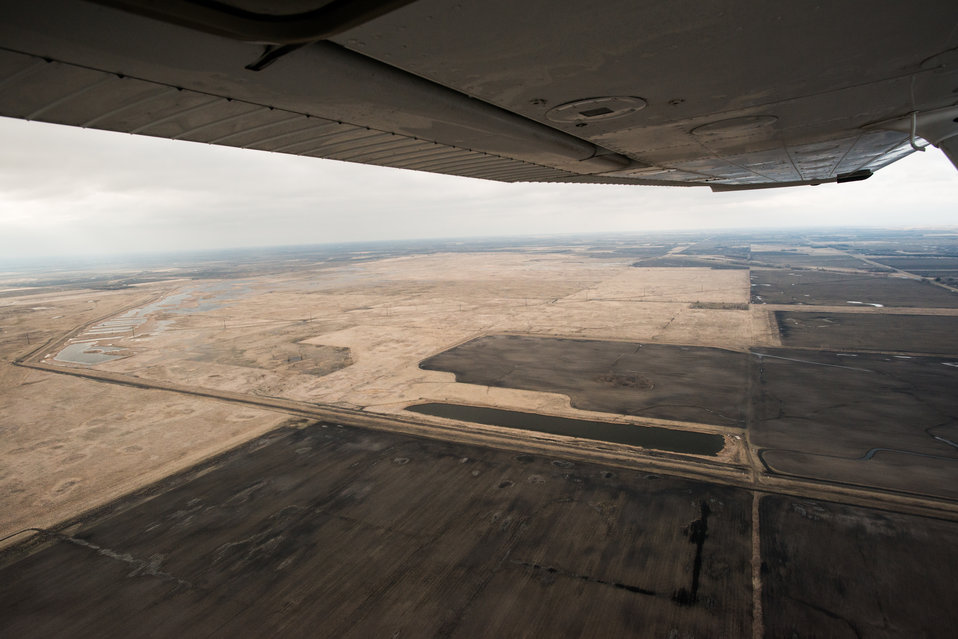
English Coulee Watershed Dam, a Public Law PL83-566 Small Watershed Program, in Grand Forks County, ND, on Tuesday, April 30, 2013. To learn about the Red River Basin Initiative, see www.mn.nrcs.usda.gov/news/features13/RRBI.html.